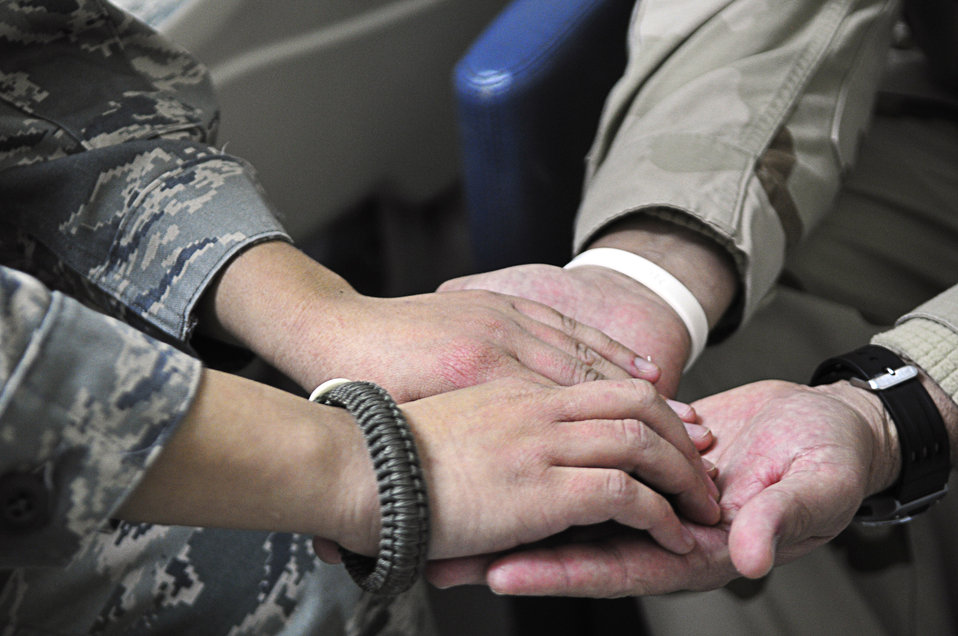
President's Promise

U.S. Air Force 2nd Lt. Andrea Laursen, a registered nurse deployed to the Craig Joint Theater Hospital at Bagram Airfield, Afghanistan, and her father U.S. Navy Hospital Corpsman 1st Class Kevin Laursen hold hands here during a visit, Jan. 4, 2011. The father and daughter servicemembers were able to reunite thanks to a call from President Barrack Obama on Christmas Day in which Seaman Laursen asked for one Christmas Wish, to see his daughter.